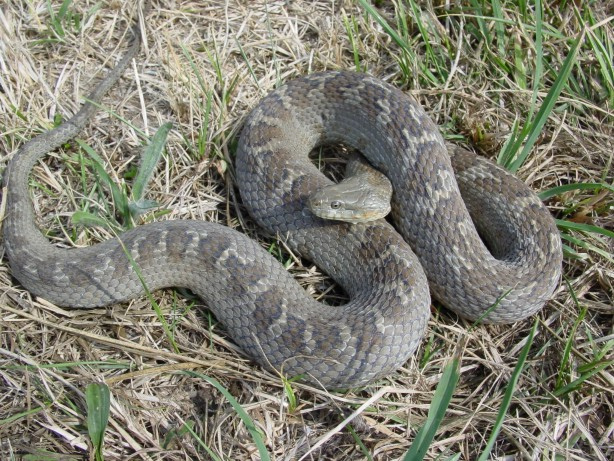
Recovered Lake Erie watersnake (Nerodia sipedon insularum)